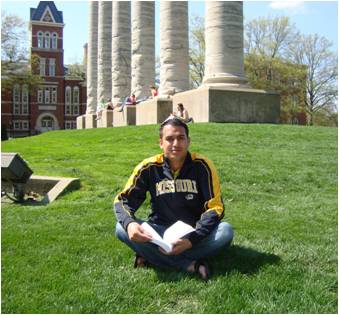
Fulbright Scholars Advance Afghanistan

When Abdullah Jan met Shabnam, they were seniors in the Engineering Department at Kabul University. They soon began to intern at the Kabul Central Materials Laboratory operated by USAID’s Afghanistan Infrastructure Rehabilitation Program (AIRP).

A year and a half later, Abdullah and Shabnam were on their way to study in the United States as Fulbright scholarship recipients. Their experience at the Kabul Central Materials Laboratory convinced them that they could contribute to Afghanistan’s transition to a stable and economically sustainable society. “I have received other internships,” Abdullah said, “but I think that the internships that AIRP provides to Afghan students are the most effective ones.”

In the United States, the now married couple is enrolled in the Transportation Engineering Master’s Program at the University of Missouri. Both have 4.0 GPAs, the highest score students can achieve. After they complete their degrees, they will return to Kabul University as assistant professors.

The experience at the University of Missouri is providing Abdullah and Shabnam with top quality course work and widening their horizons as future teachers and administrators. “Through professional courses and activities, I am learning everything about the university, including communications, administrative systems, and the behavior of professors,” said Abdullah.

The more Abdullah and Shabnam learn, the more they are convinced that they can help Afghanistan to succeed. “You must use every available opportunity,” they said. “Be persistent, don’t be afraid to innovate, be honest and dependable, and take responsibility for what you do.”

When they return to Afghanistan, one of their first plans is to start a branch of the Institute of Transportation Engineers to support safe and efficient traffic operations and other transportation related services in Kabul. “Anyone who wants to be a successful engineer should never stop learning,” Abdullah said. “I am really optimistic about the future of Afghanistan.”